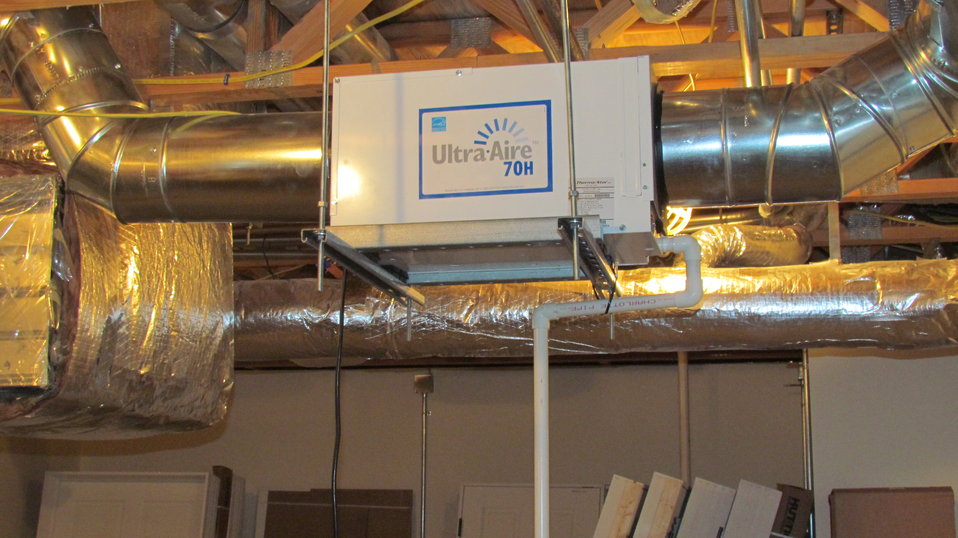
Humidifier used to add additional moisture to house during the heating system if required.